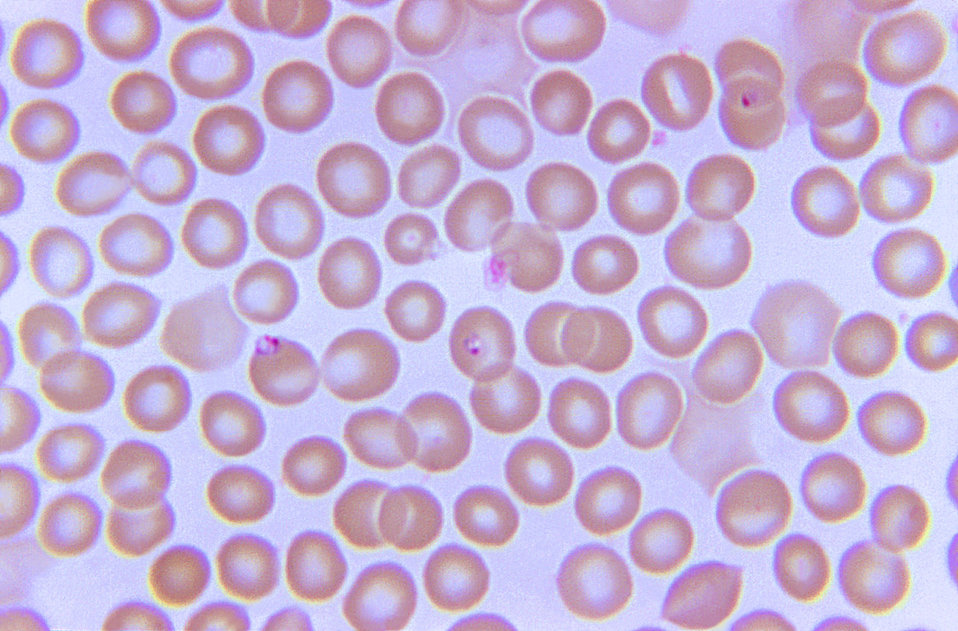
Note the developmentally similar Babesia sp. trophozoites, to those seen in Plasmodium spp.; Giemsa stained.